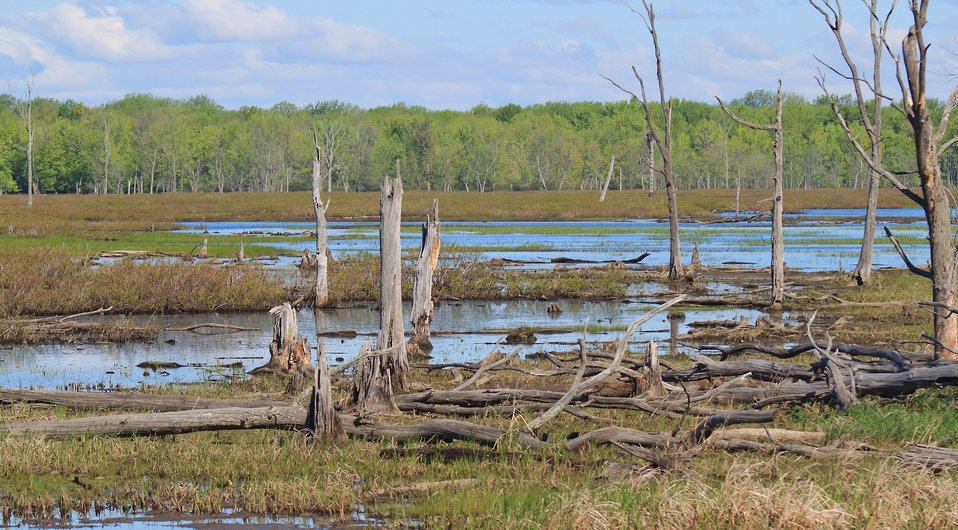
Cranberry Pool at Missisquoi National Wildlife Refuge Wetlands.